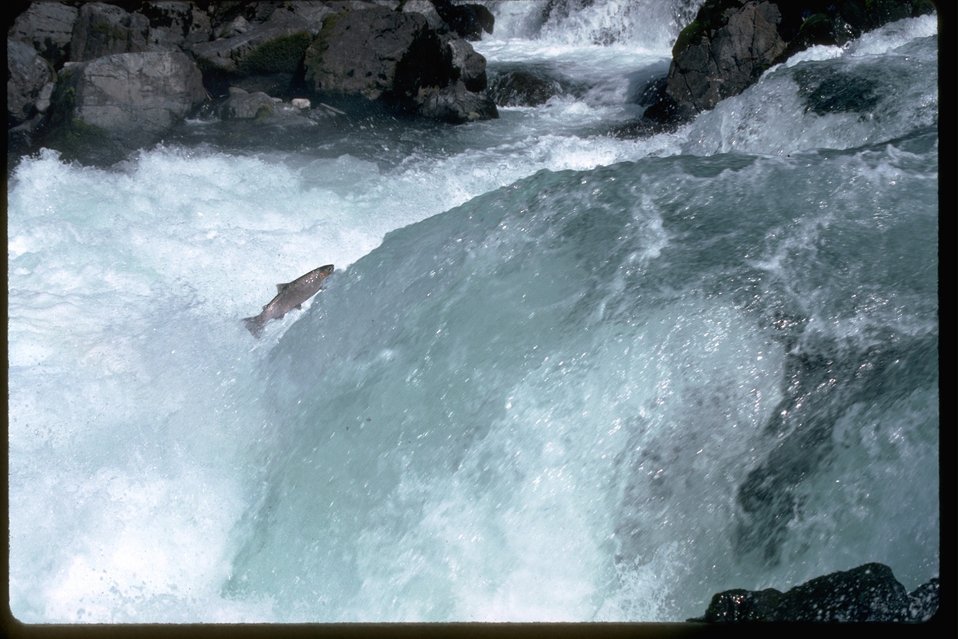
Salmon or Steelhead jumping up falls.